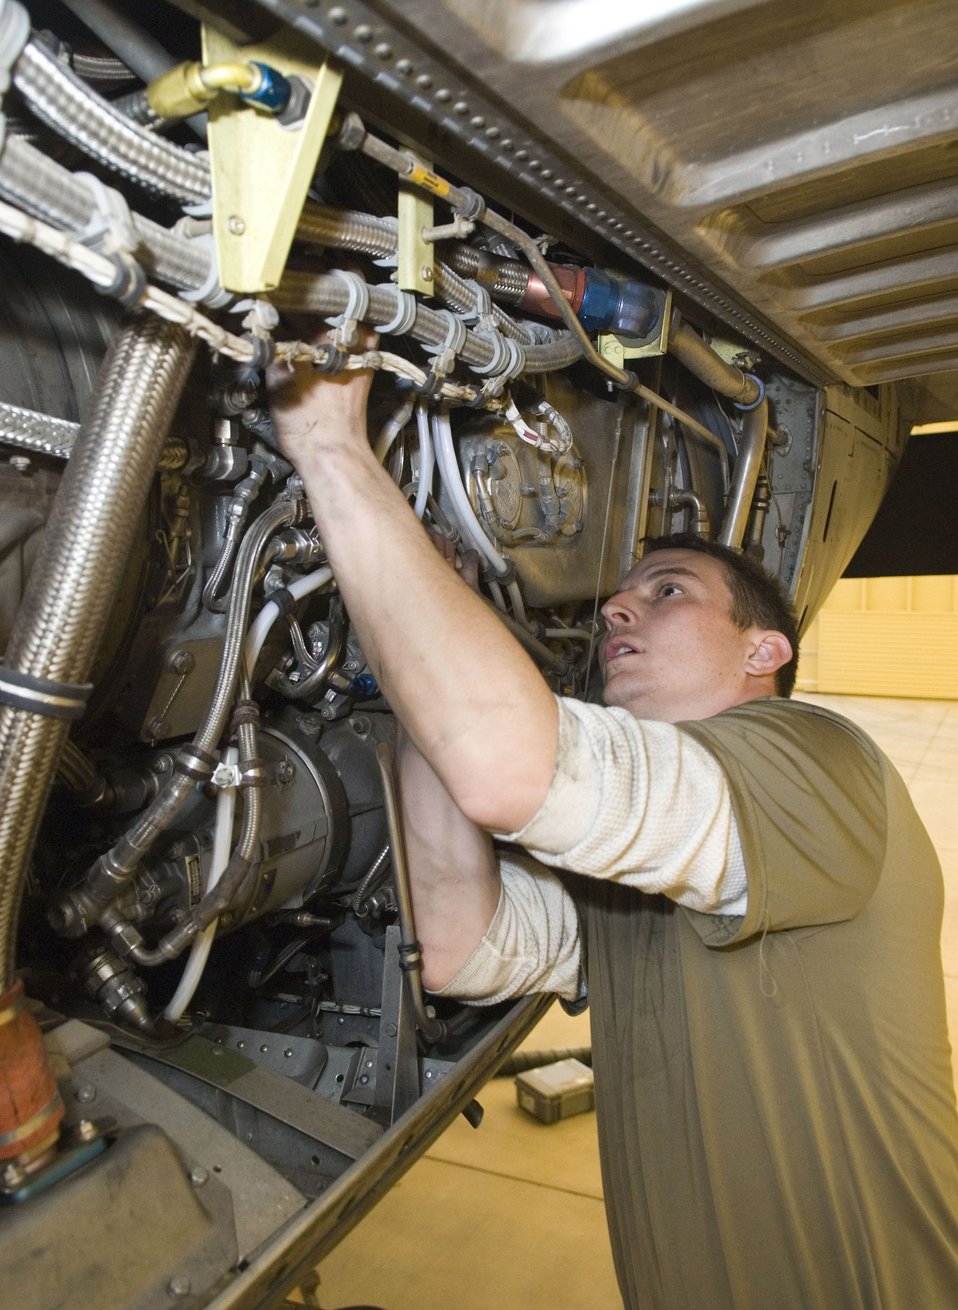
What's under the hood

Senior Airman Wes Leturgez checks for discrepancies on a C-130 Hercules engine Jan. 4 while performing a 90-day inspection on the engine at Balad Air Base, Iraq. Airman Leturgez is an aircraft maintenance unit crew chief for the 777th Expeditionary Airlift Squadron and is deployed from Little Rock Air Force Base, Ark.